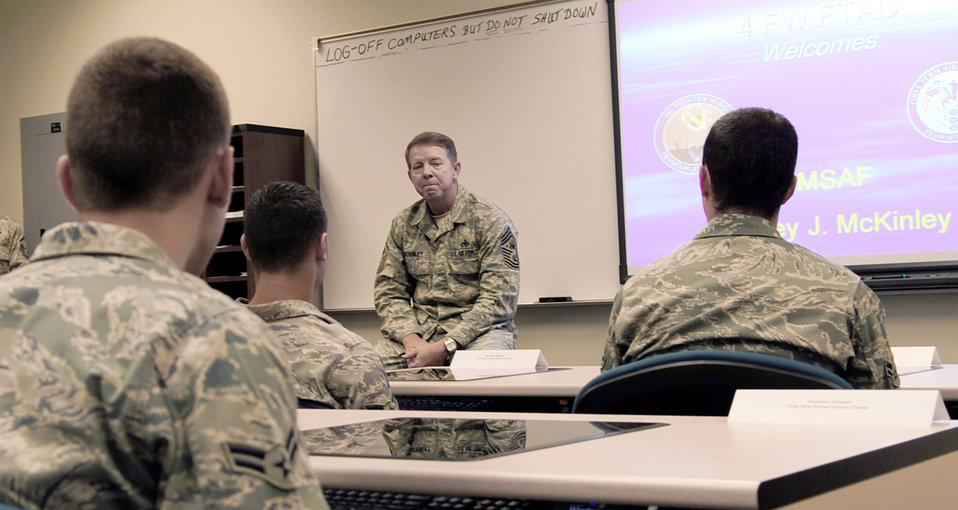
CMSAF visits Seymour Johnson

Chief Master Sgt. of the Air Force Rodney McKinley addresses Airmen enrolled at the First-Term Airmen's Center during his visit to Seymour Johnson Air Force Base, June 12. Like the FTAC Airmen, Seymour Johnson was Chief McKinley's first duty station.